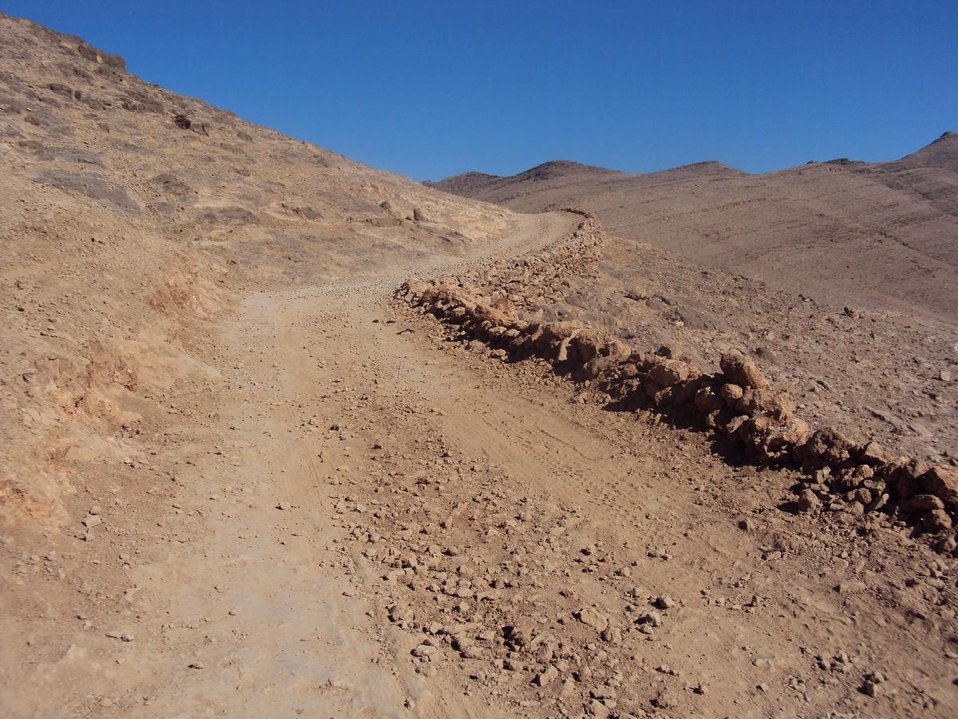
completed section